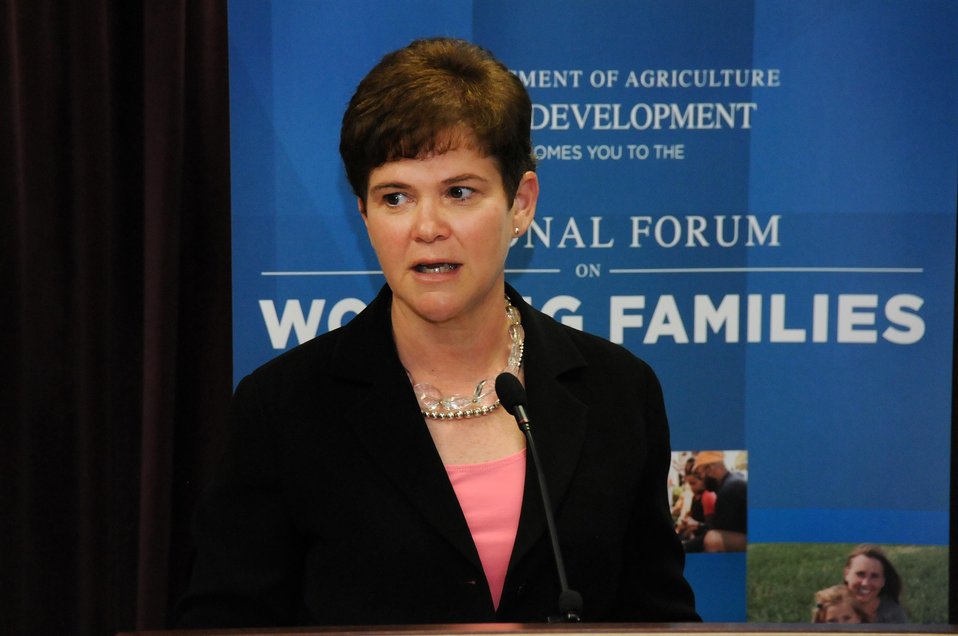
Agriculture Deputy Secretary Krysta Harden speaks at a regional forum of the White House Summit on Working Families in Petersburg, VA Wednesday, Jun. 11, 2014. The forum brings together stakeholders with government and regional leaders to identify initiatives for working families and businesses in rural areas. This forum is part of a series of regionally hosted conversations leading up to the Jun. 23, 2014 White House Summit on Working Families.